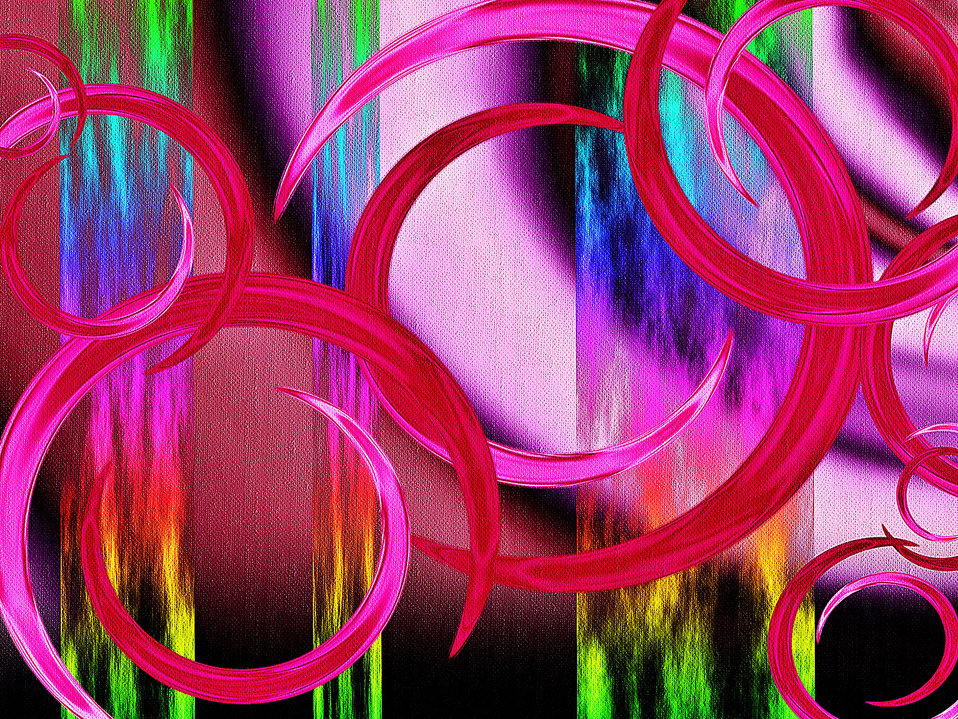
Andy

Background.